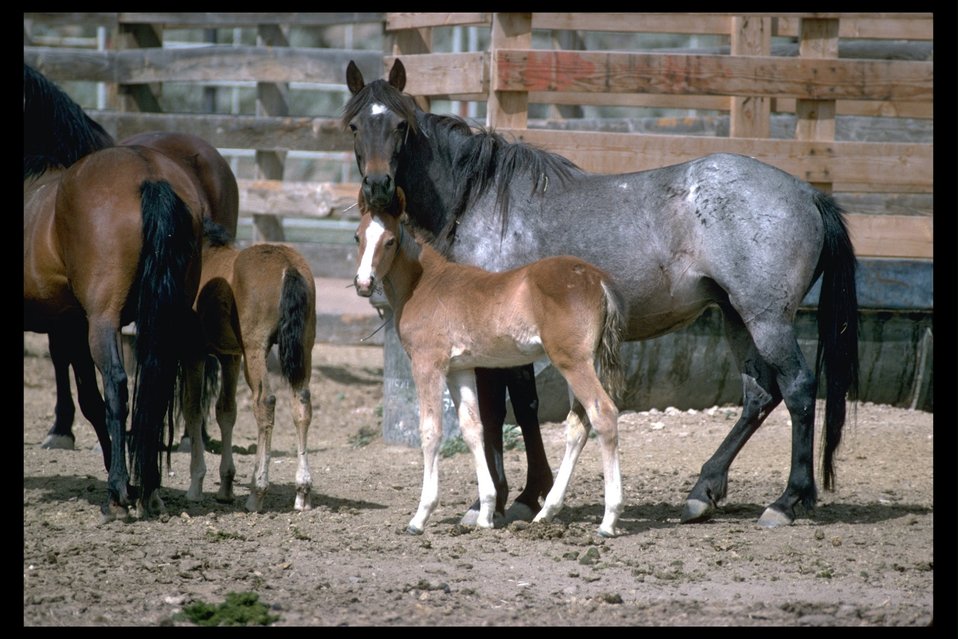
Wild horses at Burns Wild Horse Corrals.